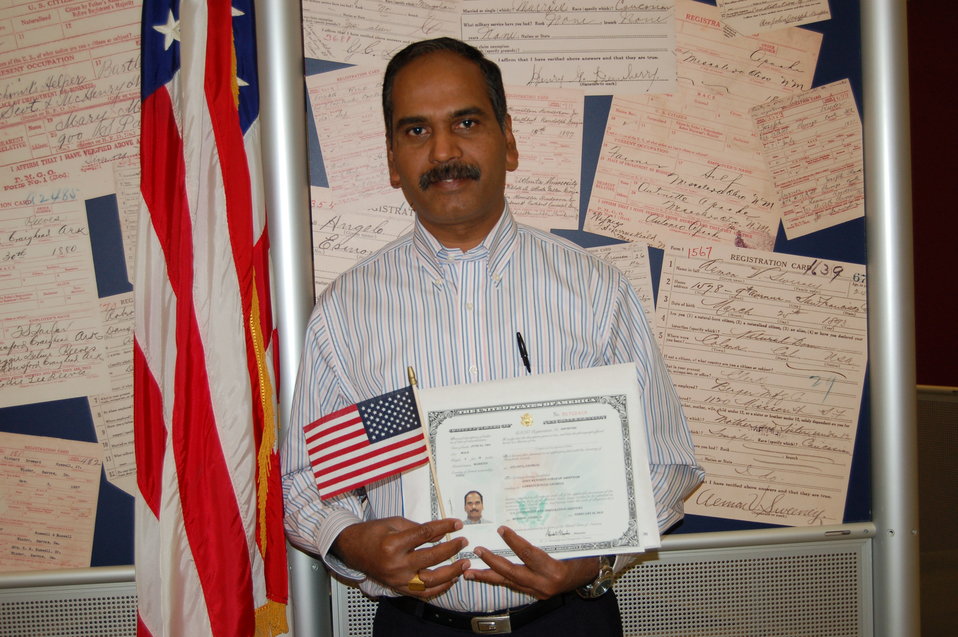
New Citizens